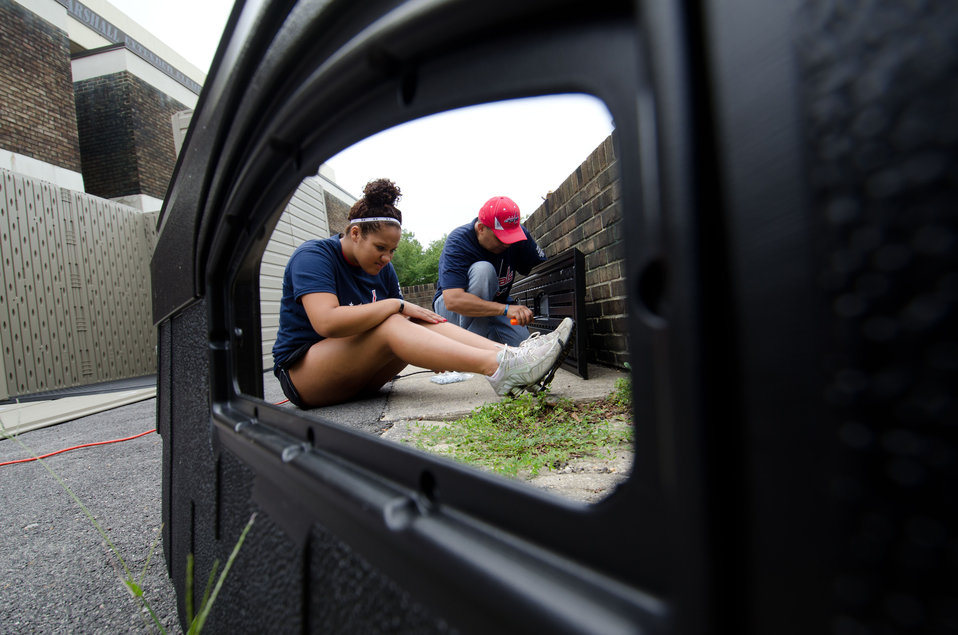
Descendants of U.S. Supreme Court Justice Thurgood Marshall, son, John Marshall and his grand-daughter Brianna attach window panels to a skylight section of a prefabricated garden toolshed, when the U.S. Department of Agriculture (USDA) People’s Garden Executive Master Gardeners, friends, and family, along with Washington Capitals fans volunteer in District of Columbia Public Schools’ (DCPS) Beautification Day, on Saturday, August 25, 2012, at Thurgood Marshall Elementary School, in Washington, D.C. They are one of many multi-generational families volunteering at this school today. Each year people are invited to help “spruce up” public school facilities in preparation for the first day of school. More than 70 volunteers pitched in at this large school facility. The People’s Garden effort involves building and painting raised planter boxes, then preparing the soil mixture so they are “ready to grow.” Washington Capitals Forward Mike Riberio, his family and mascot Slapshot participated in every project underway at Marshall School. From the outside gardens, to inside murals, and robotics worktable construction, the teams made their goals.